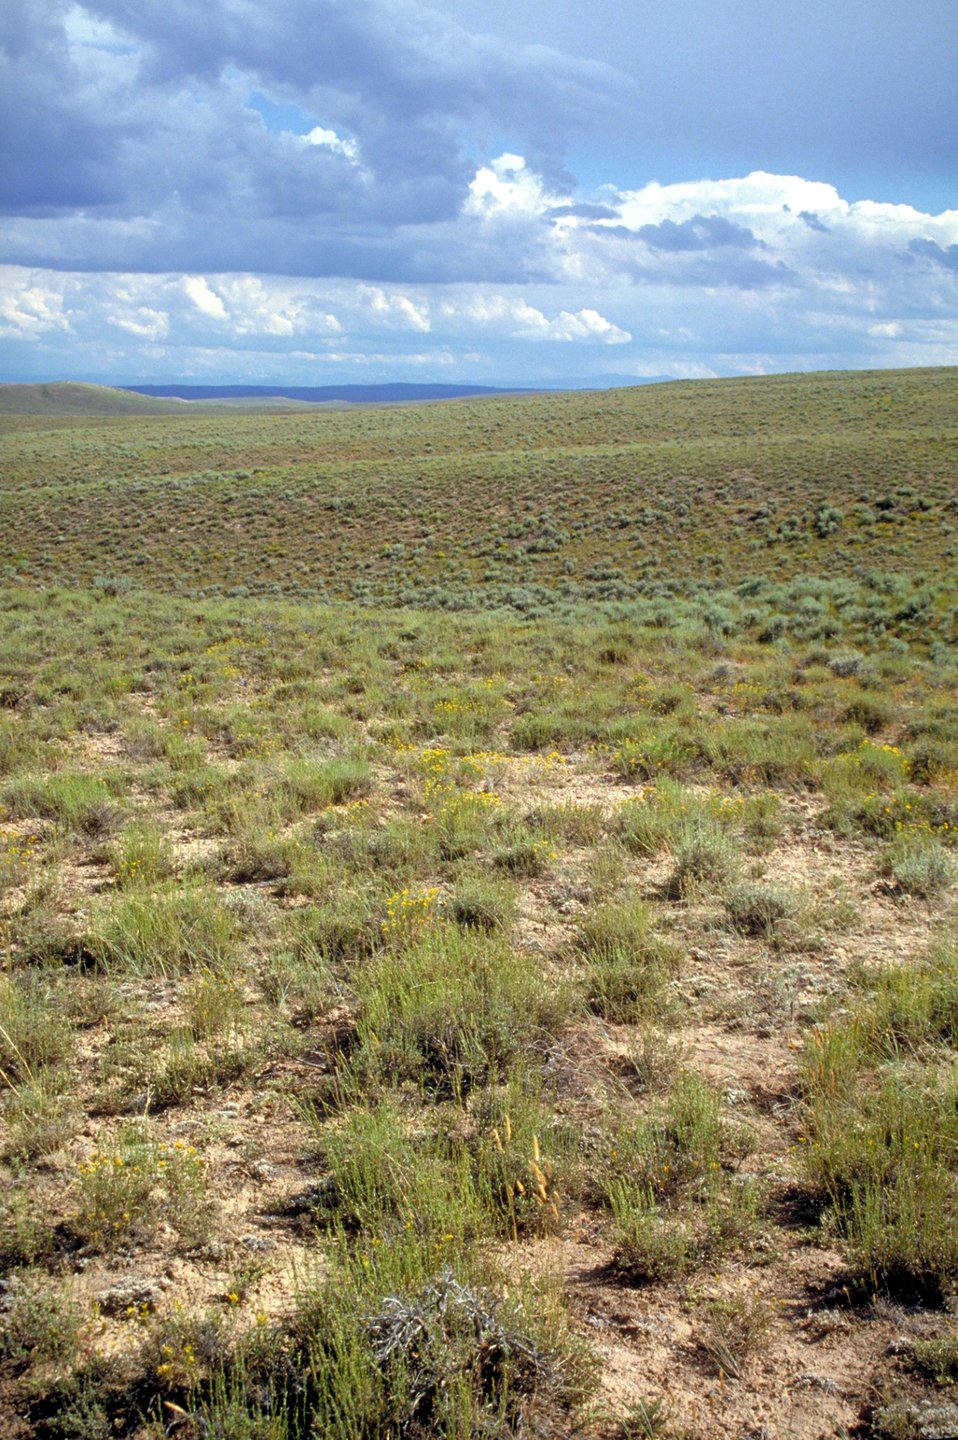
Rangelands in Northern Utah.